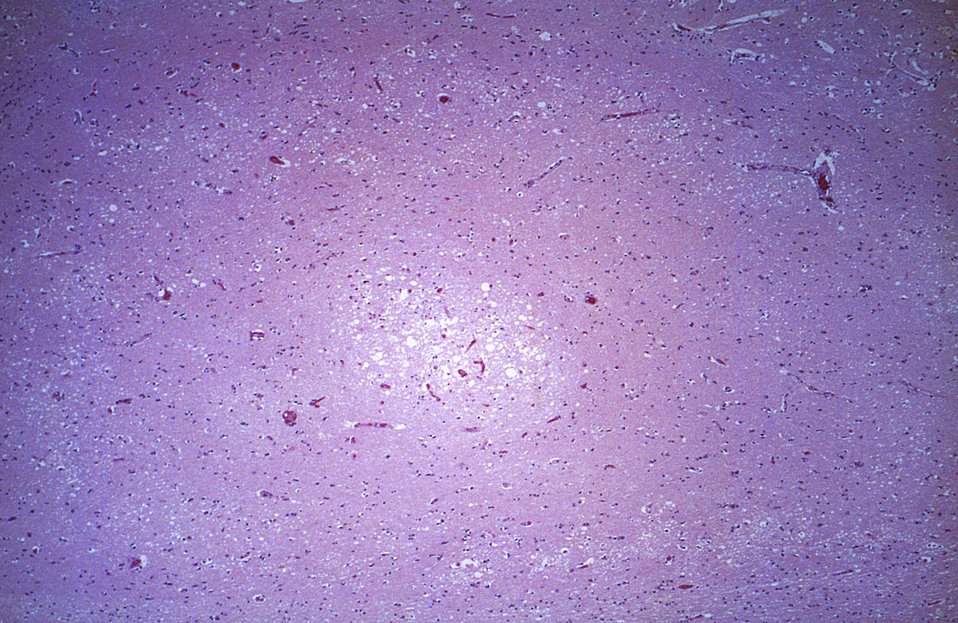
This photomicrograph revealed some of the cytoarchitectural histopathologic changes associated with a Nipah virus infection affecting the central nervous system of a human patient. In this particular case, a centrally-located target lesion can be identified.